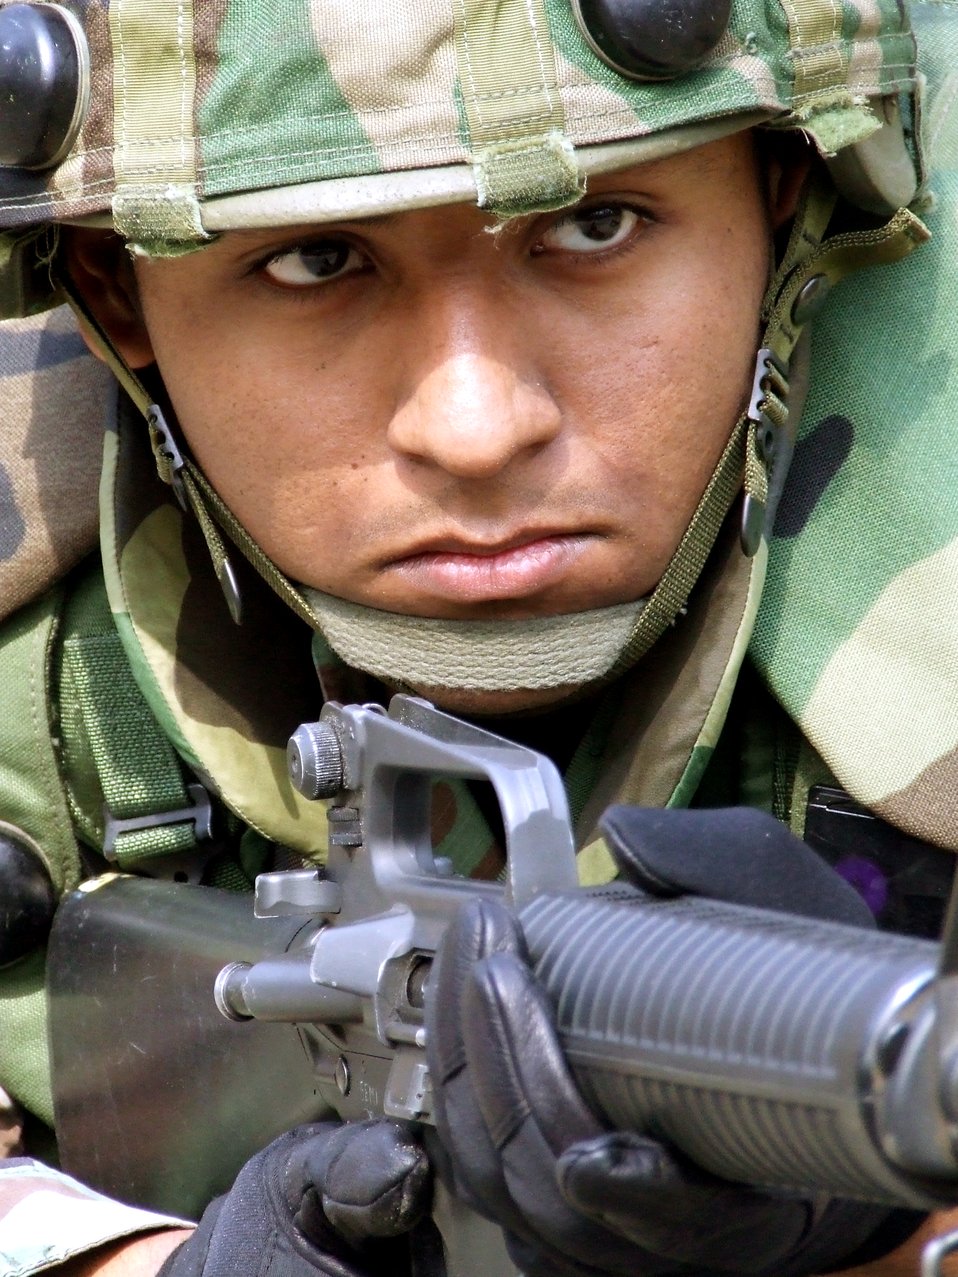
Advanced Contingency Skills Training

Airman 1st Class Jon Luna of Pope Air Force Base, N.C., practices squad and fire team manuevers with other students as part of a tactics and patrolling class for the Advanced Contingency Skills Training Course March 14on a range on Fort Dix, N.J. The course, made up of more than 300 students, prepares Airmen for upcoming deployments through teaching areas such as deployment tactics, patrolling, convoy operations and self defense. The course is taught by the U.S. Air Force Expeditionary Center's 421st Combat Training Squadron.